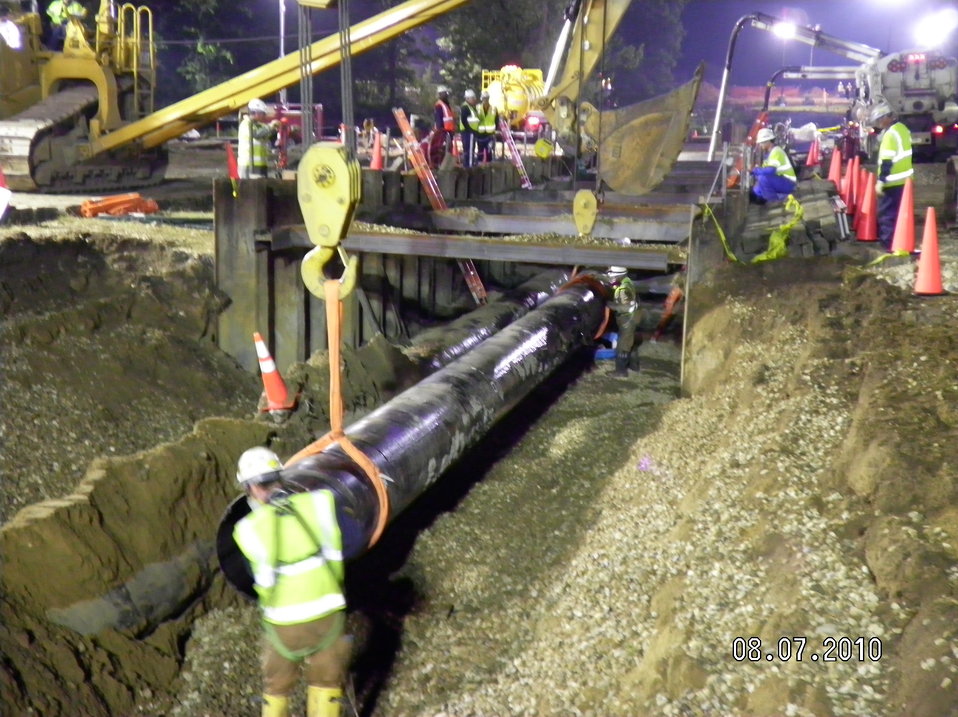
Lifting pipe - Enbridge Oil spill pipeline

Technicians begin removal of a section of pipe from the Enbridge pipeline oil spill site near Marshall, Michigan.